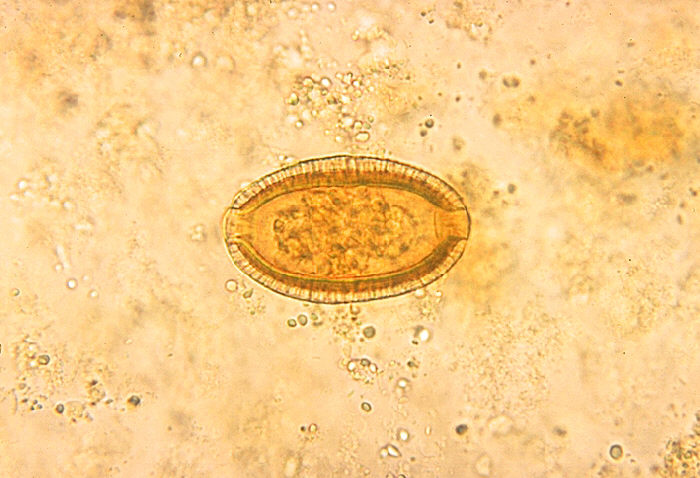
Capillaria species egg.